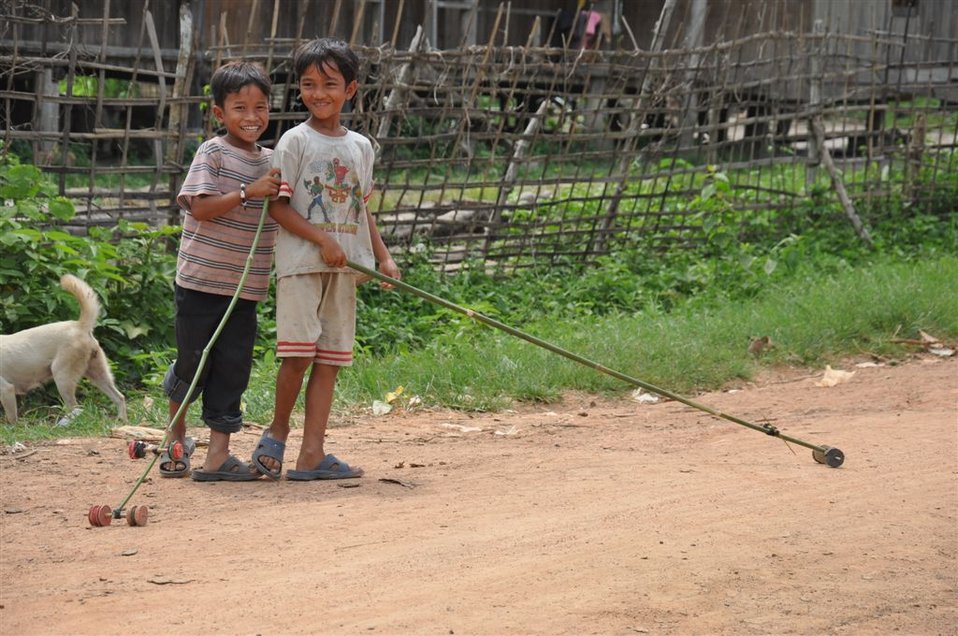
Local populations benefit from new cocoa crop techniques and market access.